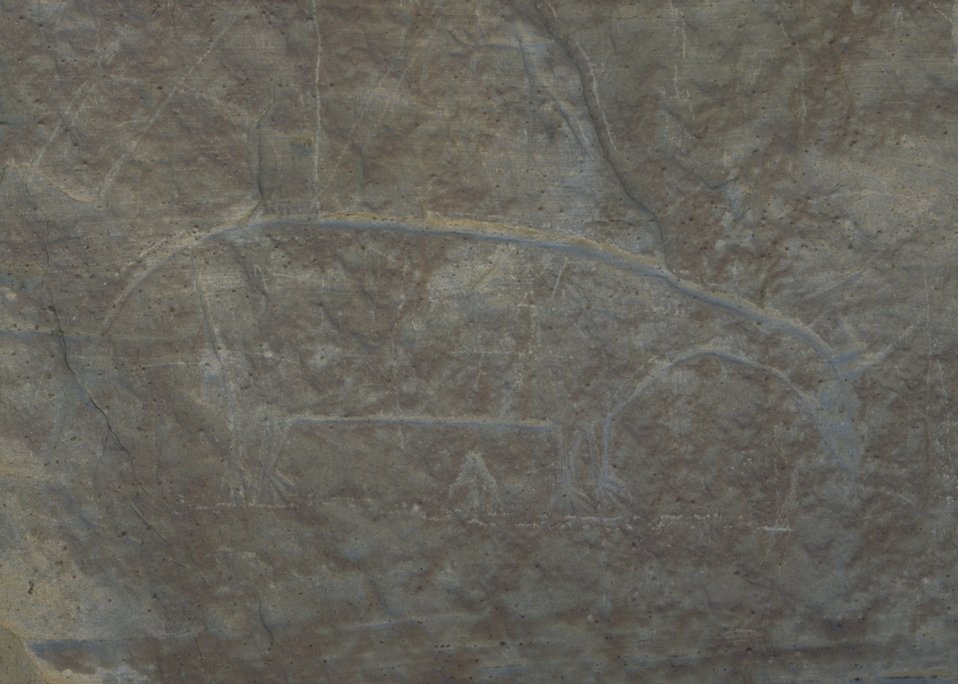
White Mountain Petroglyphs, Rock Springs Field Office.